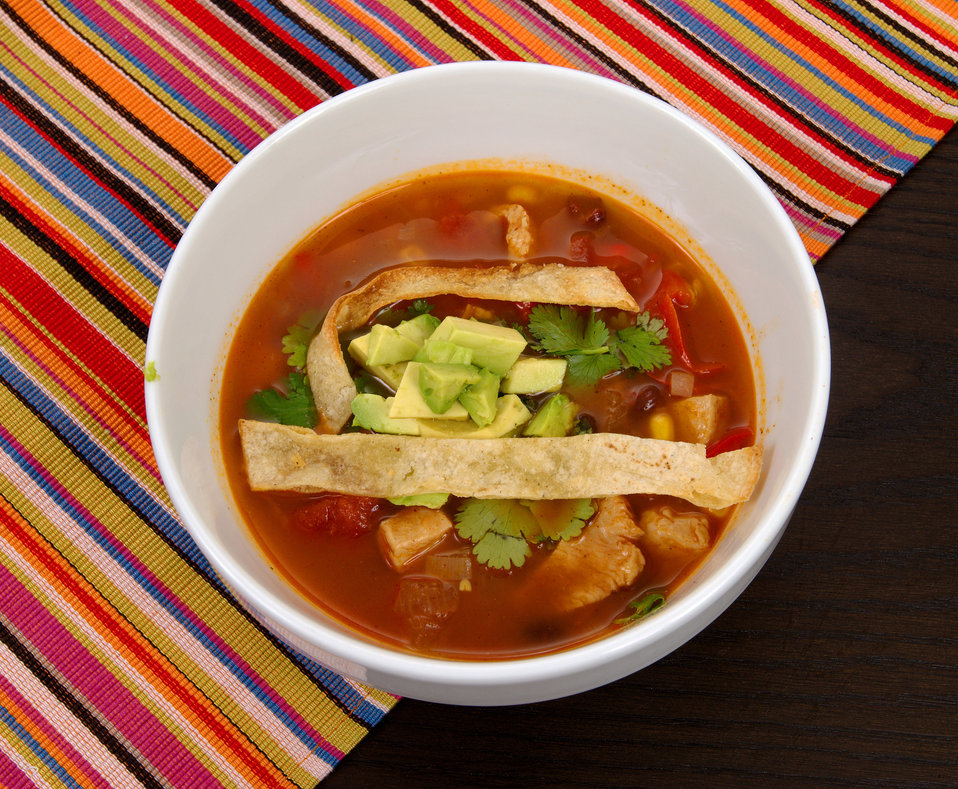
This image depicts a bowl of Hearty Bean and Vegetable Soup. The list of ingredients needed to create this healthy dish includes pink beans, lentils, black beans, yellow split peas, kidney beans, and black-eyed peas, smoked ham hock, basil, rosemary, marjoram, onion, carrots, celery, diced tomatoes, salt and pepper. This bowl was topped with chopped avocado, and low-fat tortilla strips. To see this recipe, click the link below. These are nutrient-dense, anti-oxidant-rich foods, packed with vitamins and minerals.